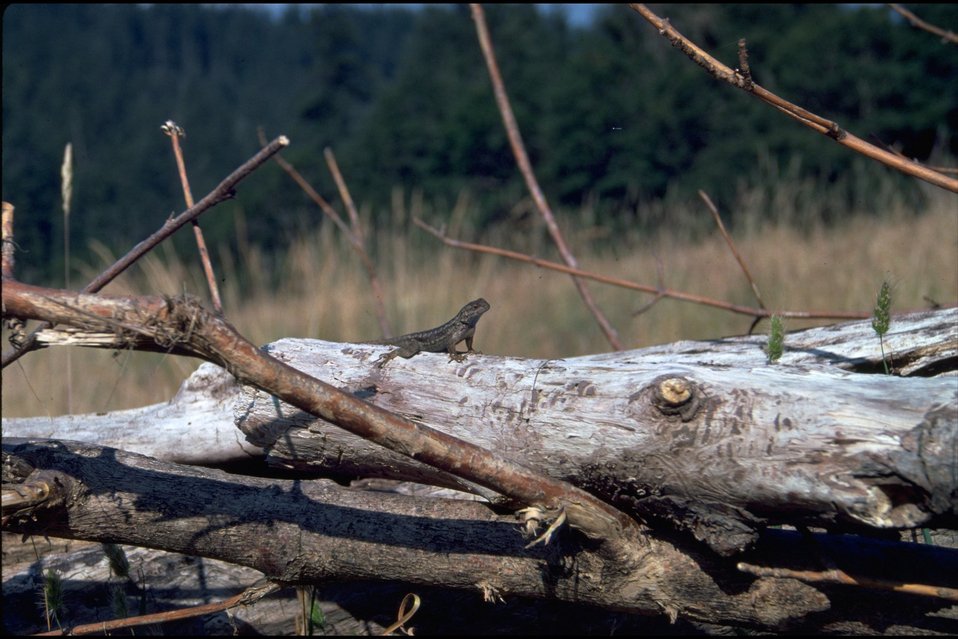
Rogue River - Lizard.